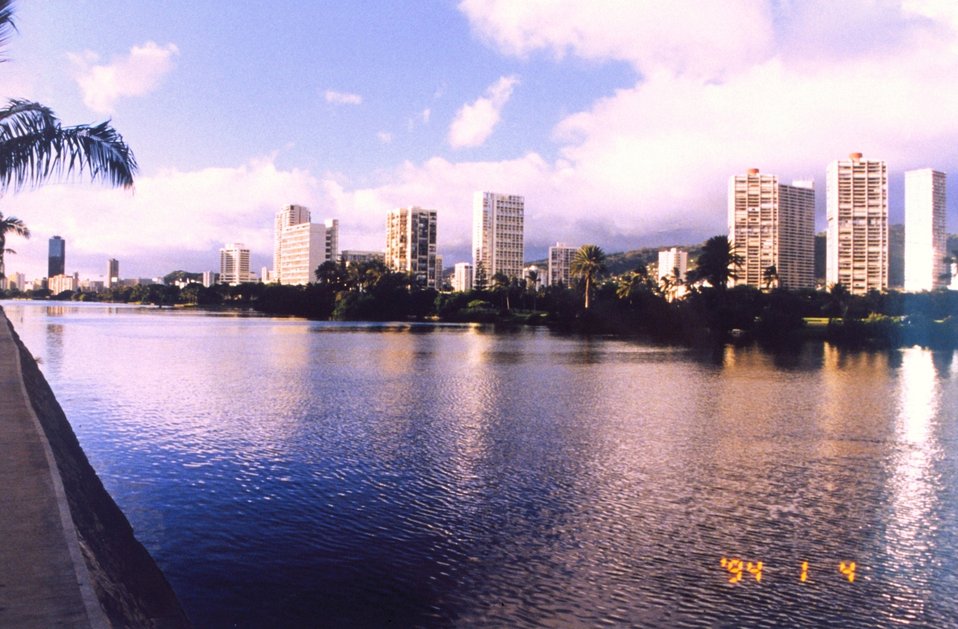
A view along the Ali Wai Canal near Waikiki Beach.